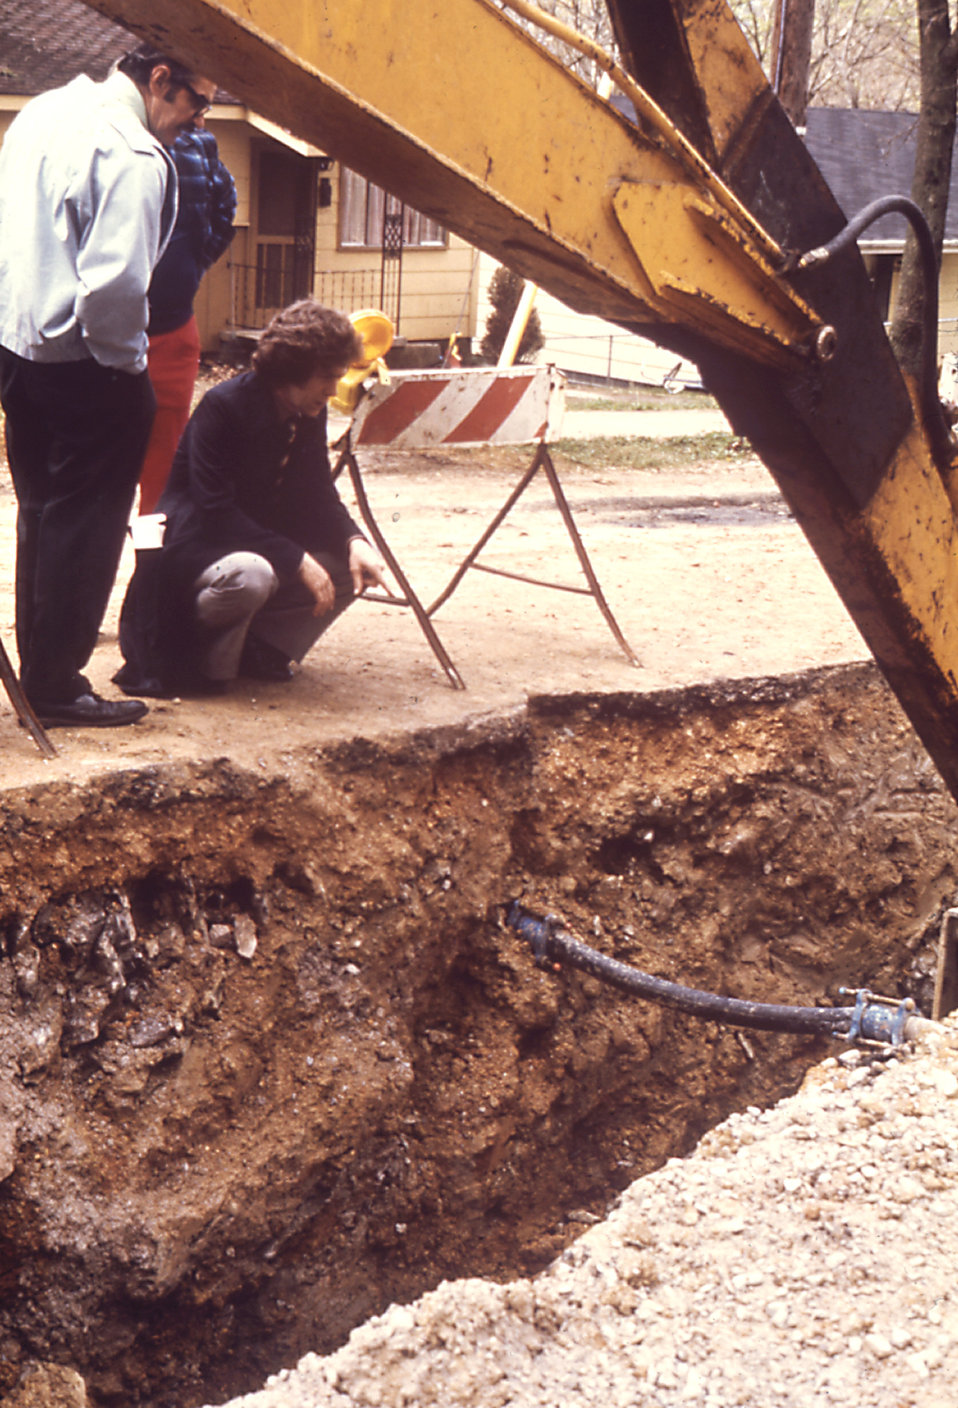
These workers replaced a section of water pipes after a local chlordane contamination in a Chattanooga, Tenn. neighborhood.